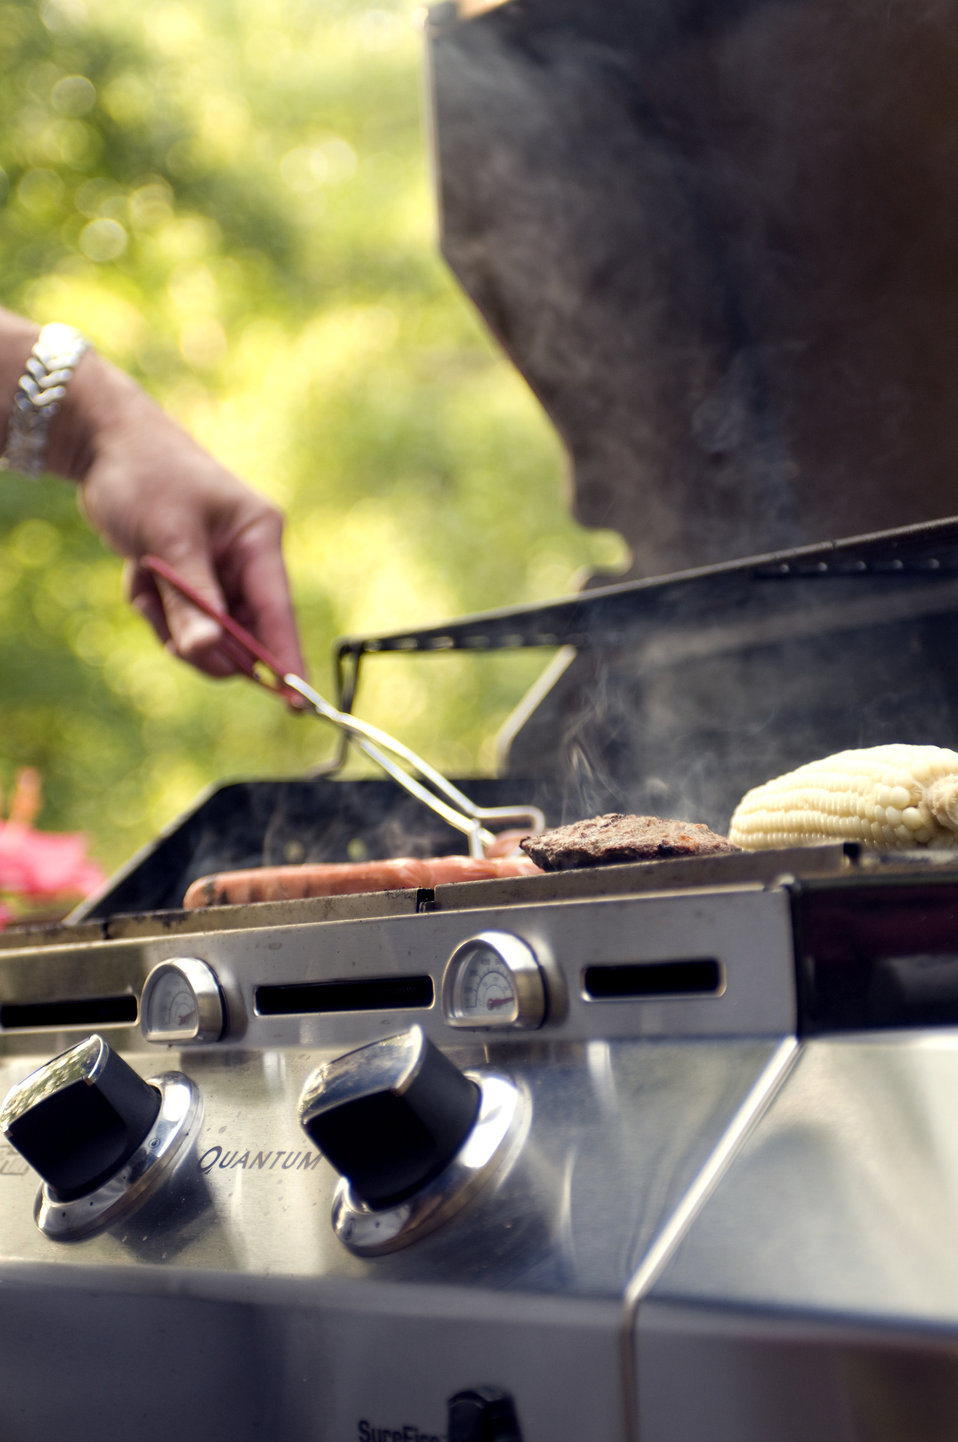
This image shows the grill, being used to thoroughly cook some hamburgers and hotdogs during an outdoor cookout.